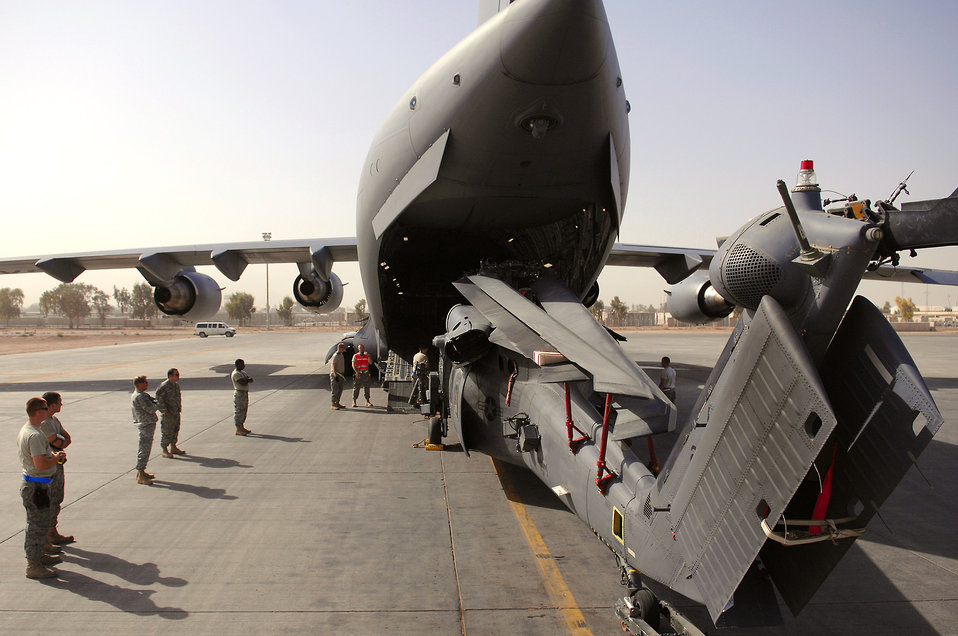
How to put a square peg in a round hole

A team of Airmen assigned to the 64th Expeditionary Helicopter Maintenance Unit stand in position around an HH-60 Pave Hawk during upload into a C-17 Globemaster III July 12 at Joint Base Balad, Iraq. The Airmen position themselves 360 degrees around the helicopter to ensure it will not make contact with the aircraft. The Airmen are deployed from Davis-Monthan Air Force Base, Ariz.